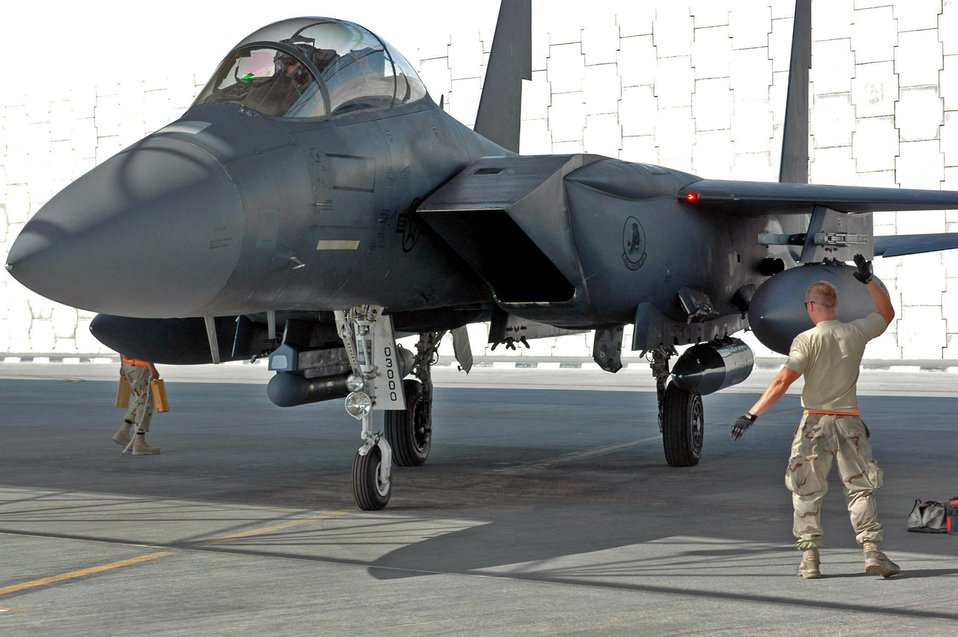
Coming back to base

A crew chief marshals an F-15E Strike Eagle at a base in Southwest Asia. The fighter had just returned from a close-air-support mission.